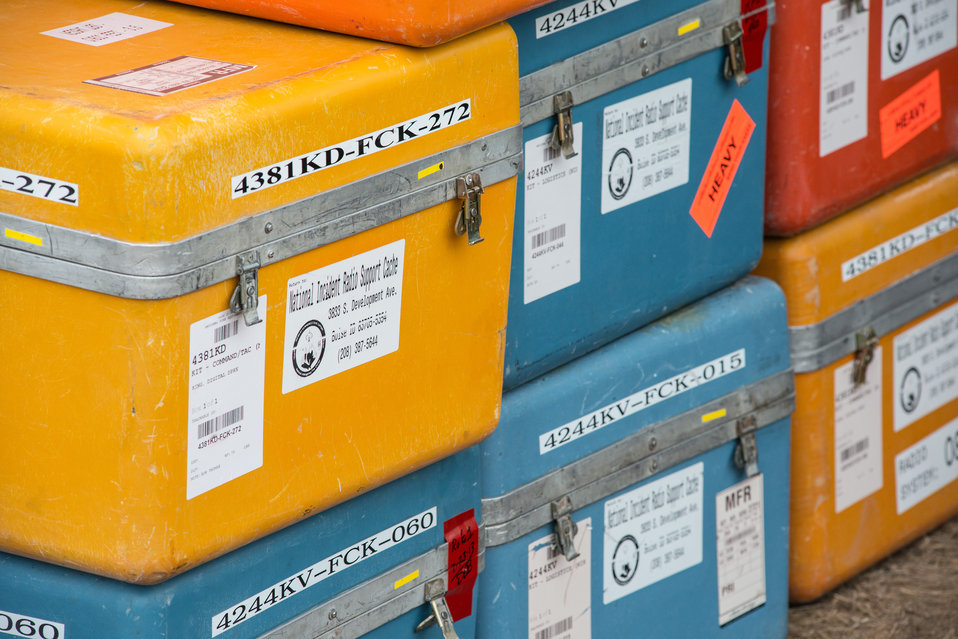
Land mobile radios are a mission essential part of wildlands firefighting; cases of radios have been cleaned, checked and sealed 'Ready For Issue' at the National Interagency Fire Center's National Interagency Incident Communications Division, in Boise, ID, and now stand ready for use at the Big Windy Complex Wildlands Fire, Incident Command Post (ICP) in Merlin, OR on Friday, Aug 9, 2013. The fire center is approximately 15 miles west of Interstate-5 and East Northeast of Galice, Oregon.